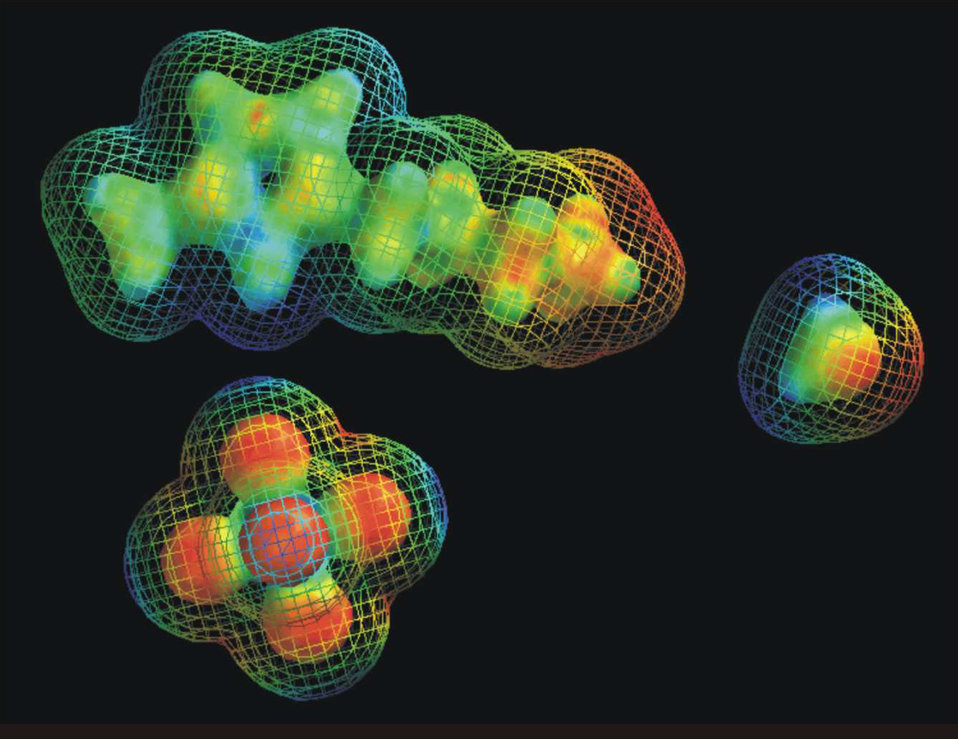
Ionic Liquid

Molecular 'space filling' models demonstrate the difference in size for the positively charged 'cation' (top image) and the negatively charged 'anion' (bottom left) that combine to form a promising ionic liquid. It is still a mystery how the much smaller water molecule (right) can have such a large effect on the viscosity of such ionic liquids.